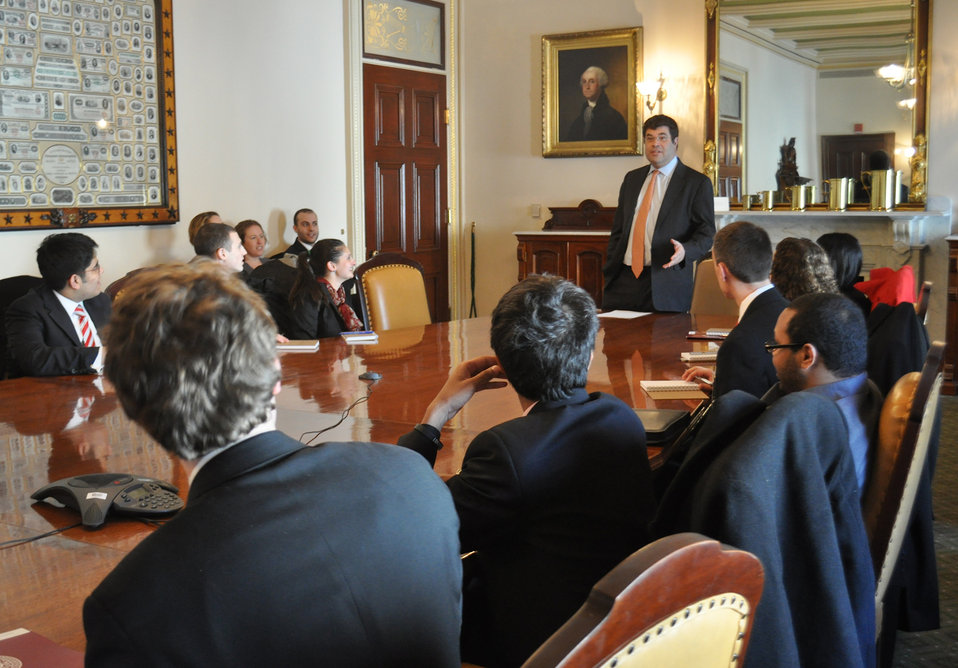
Deputy Secretary Neal Wolin speaks with students visiting from Fordham University

A group of students from Fordham University in New York visited the Treasury building and met with Deputy Secretary Neal Wolin for a candid discussion about the Department’s wide-ranging work on March 27, 2013.